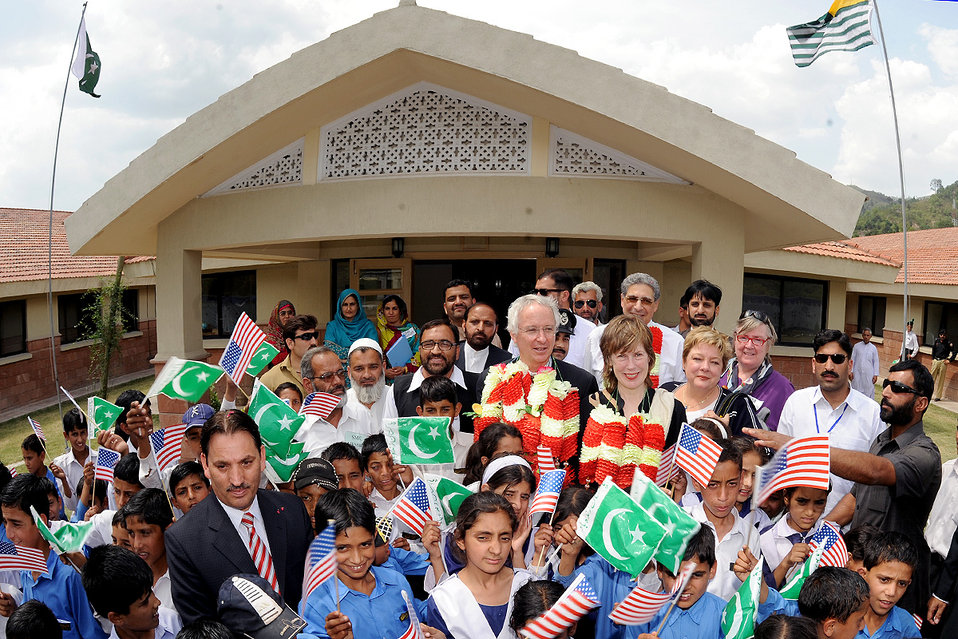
Envoy Highlights U.S. Development

“This school is concrete proof the commitment of the American people to help build a more prosperous future for the people of AJK and Pakistan. You students, and all the students that will follow you, represent our shared hope for a brighter future,” said Ambassador Munter to Arja community students, teachers, elders, and government representatives during his visit. Ambassador Munter was accompanied by his wife Dr. Marilyn Wyatt, as well as USAID Acting Country Director Karen Freeman.